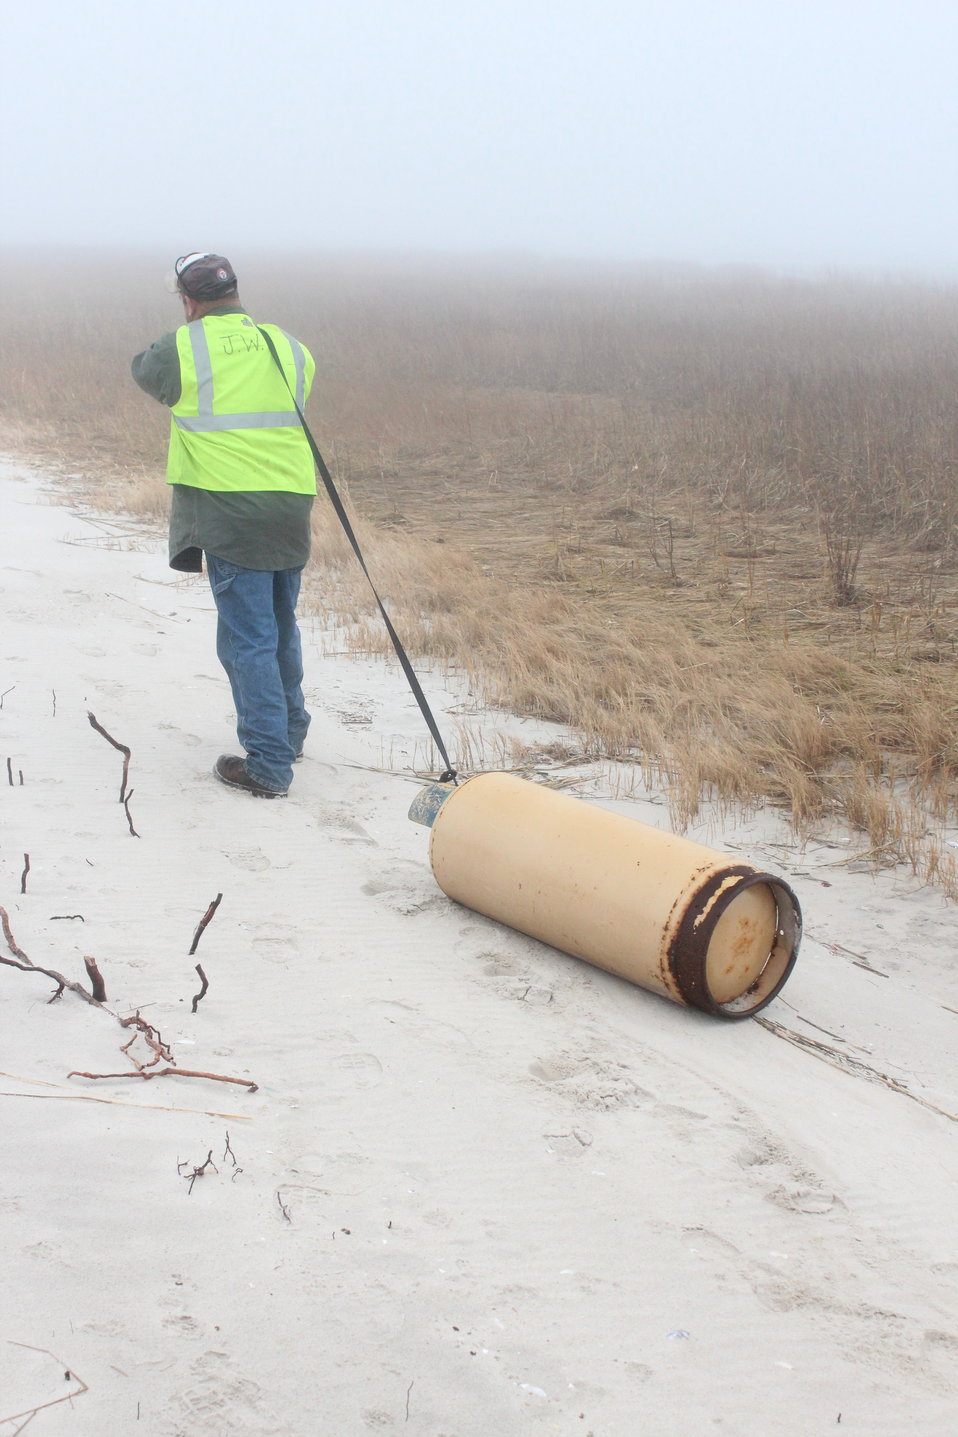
December 4, 2012 Tank discovered between Loop Parkway and Point Lookout, Long Island, NY

Searching through the brush and wetland areas crews found and removed multiple tanks and potentially hazardous containers. Many of which were still full with various oils, propane, cleaning products, paints, and solvents.